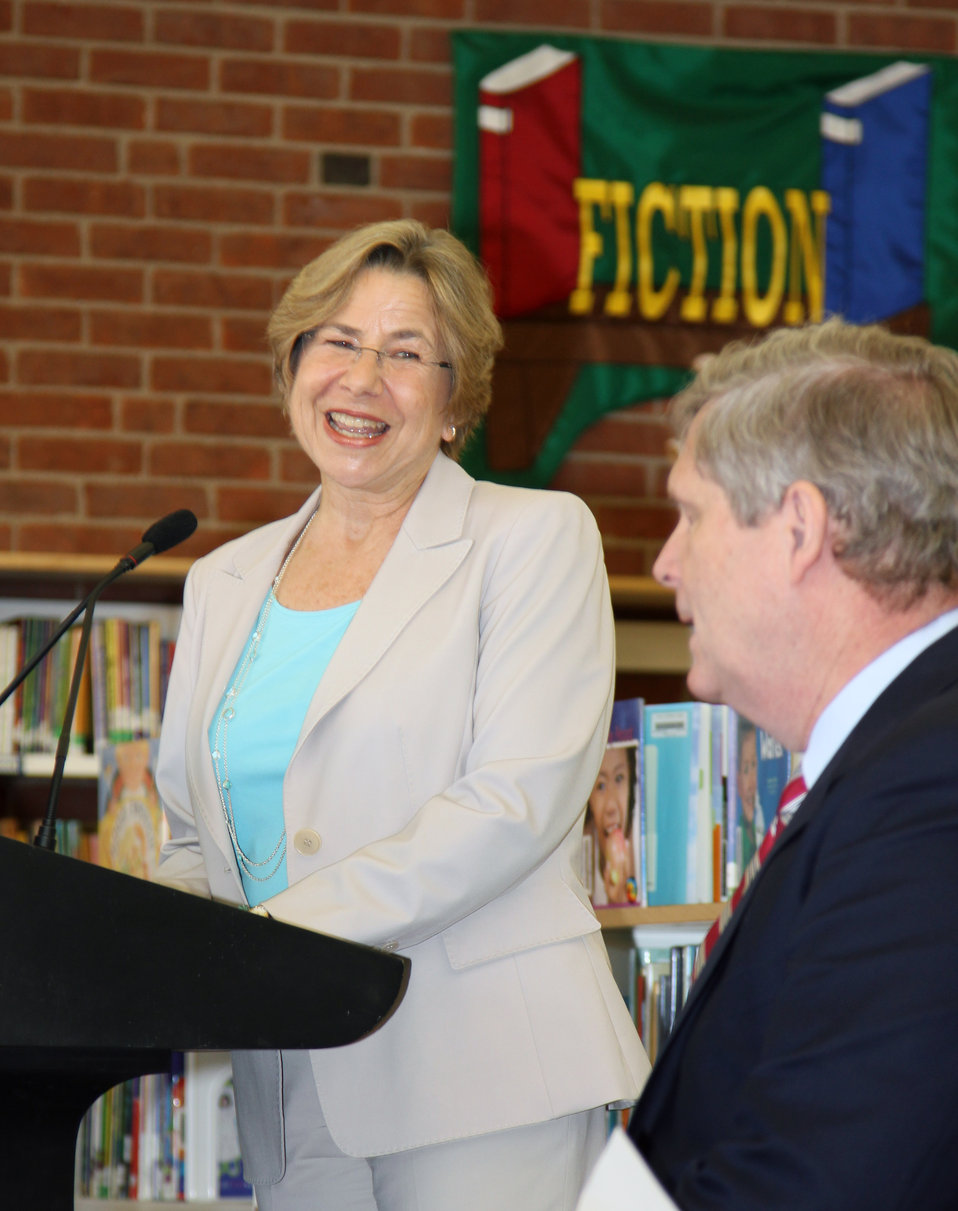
West Hartford School Superintendent, Karen List speaks during Agriculture Secretary Tom Vilsack’s visit to Henry A. Wolcott Elementary School in West Hartford, Connecticut to outline USDA efforts to raise a healthier generation of Americans in Friday, April 5, 2013.